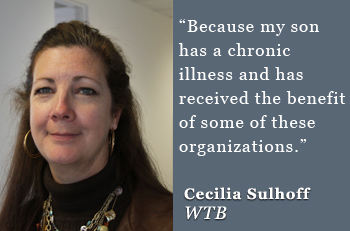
cecilia-sulhoff